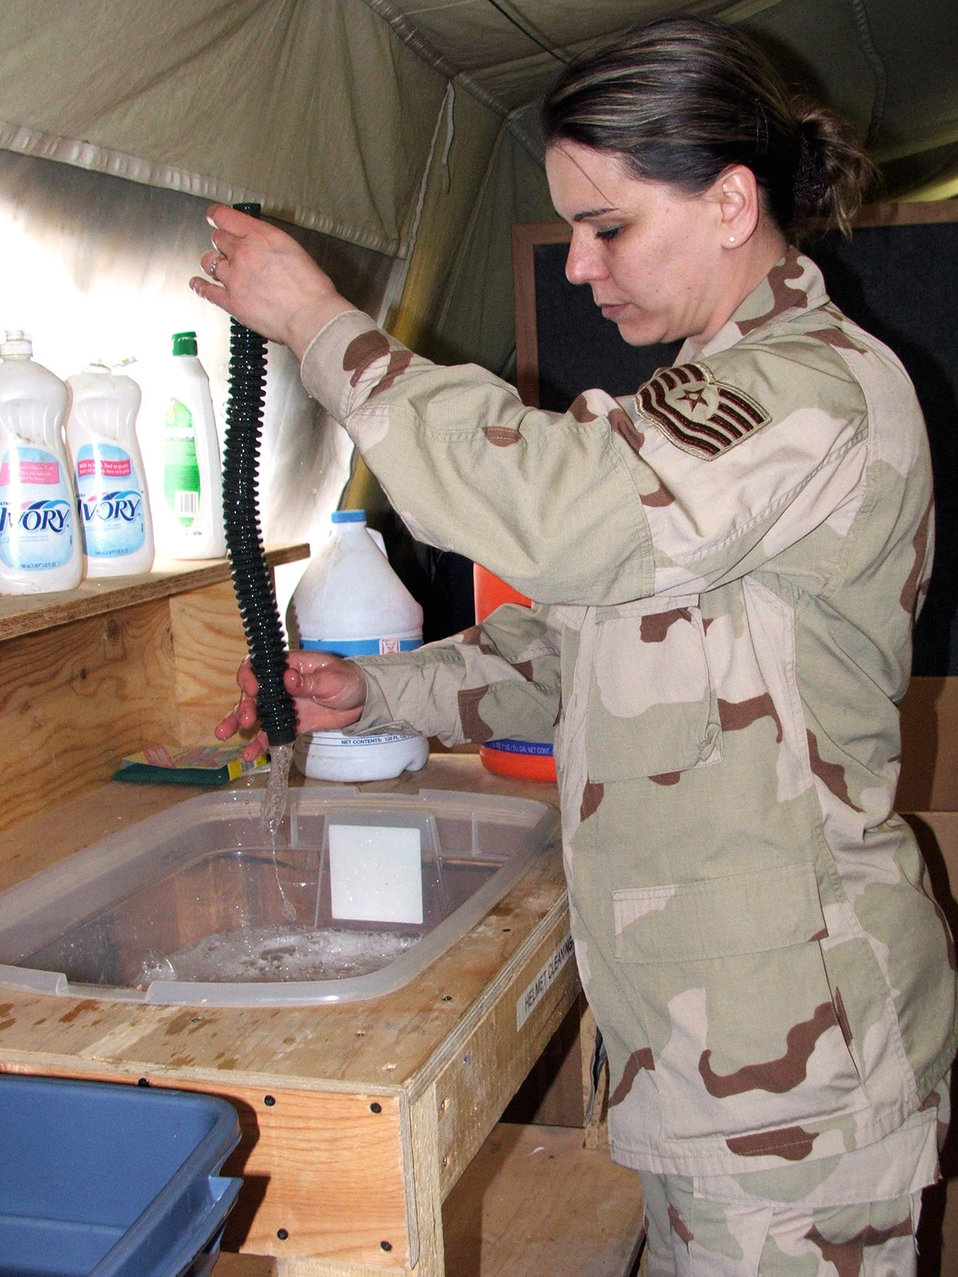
Expeditionary life-support techs keep OEF airlifters rescue ready

KARSHI-KHANABAD, Uzbekistan -- Tech. Sgt. Heidi Bishop cleans life-support equipment for aircrews deployed here. She is assigned to the 774th Expeditionary Airlift Squadron life-support section and is deployed from Mansfield, Ohio.